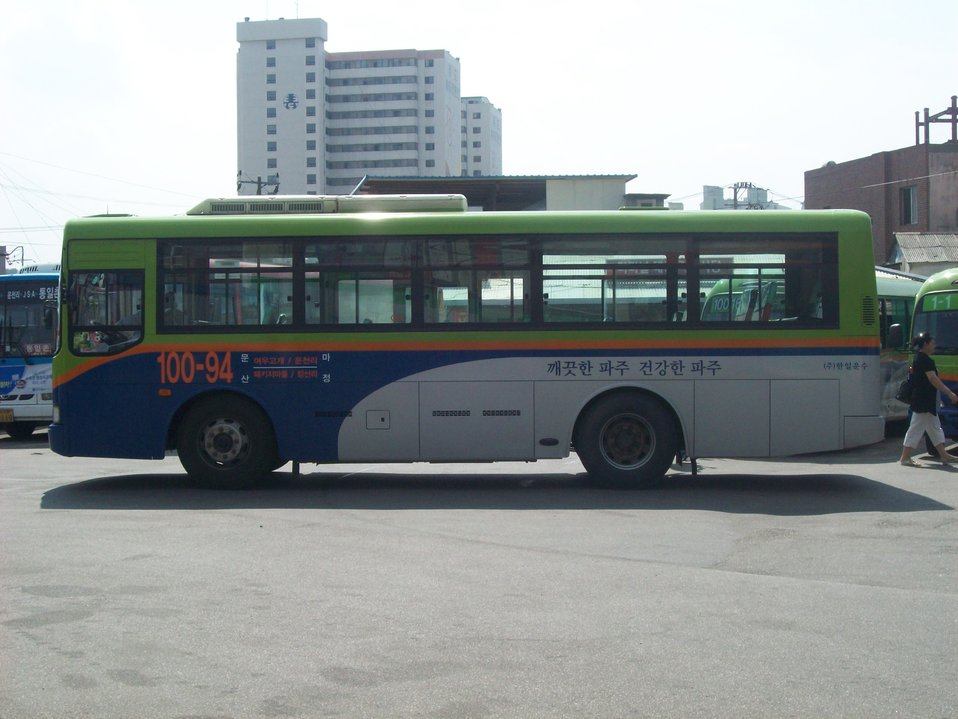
한국어: 임진각에 정차하는 100-94번 파주시 마을버스